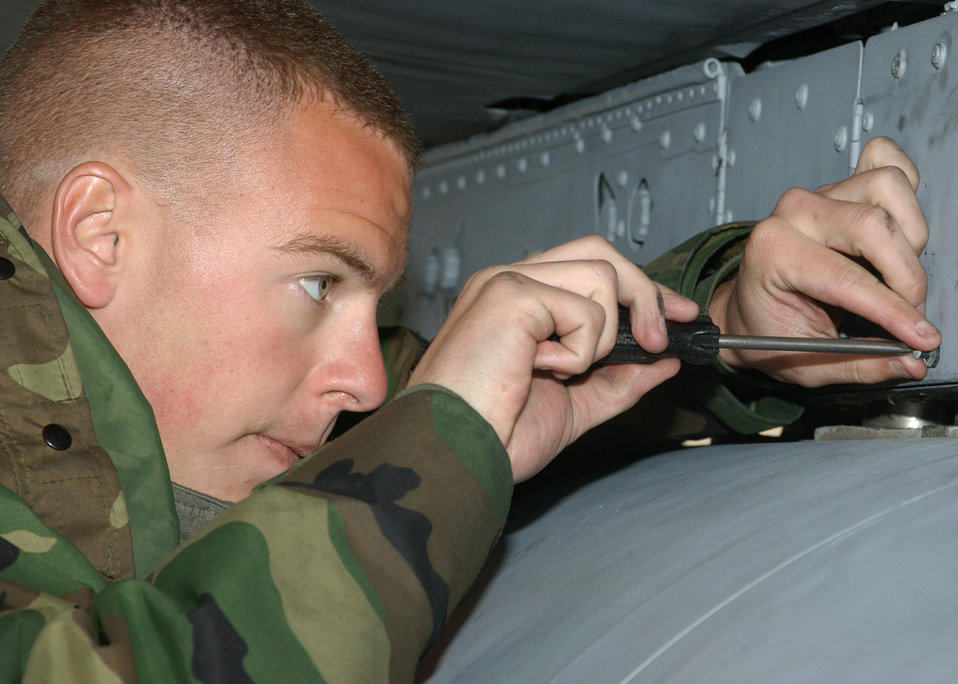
Attention to detail

DAVIS-MONTHAN AIR FORCE BASE, Ariz. -- Airman 1st Class Robert Watson works on the external fuel tank of an A-10 Thunderbolt II during an exercise here recently. Airman Watson is from the 355th Aircraft Maintenance Squadron.